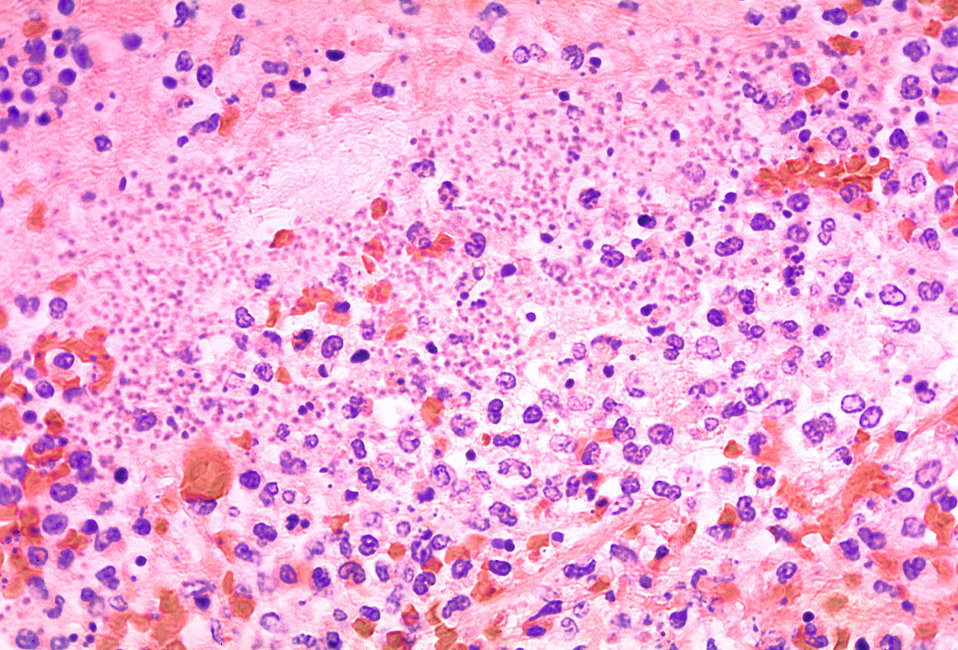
Histopathology of lung in fatal human plague.